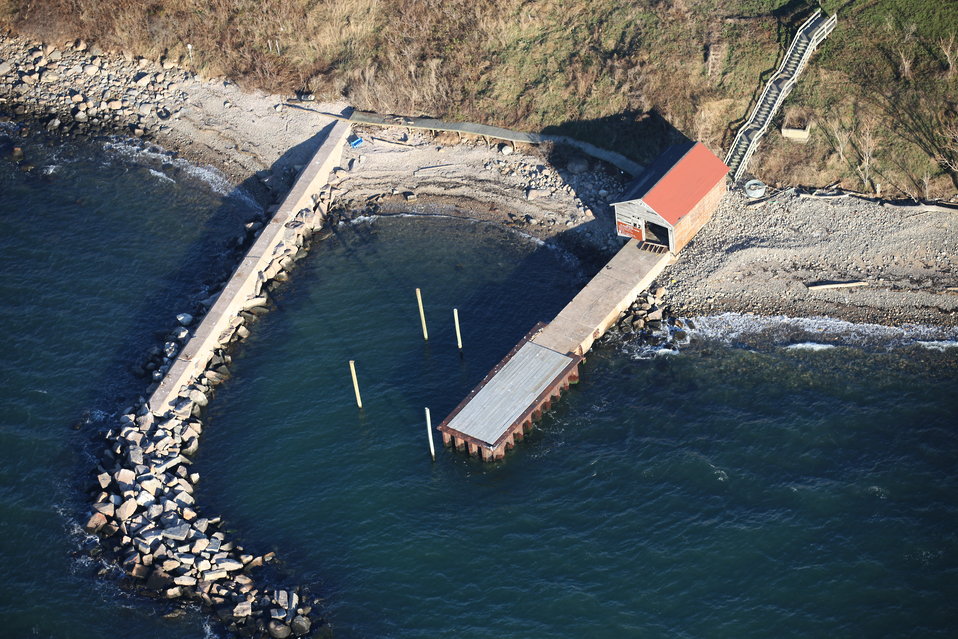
Stewart B. McKinney National Wildlife Refuge-Falkner Island (CT)

Aerial view of Falkner Island in the aftermath of storm Sandy. Dock area sustained some damage and debris can be seen.